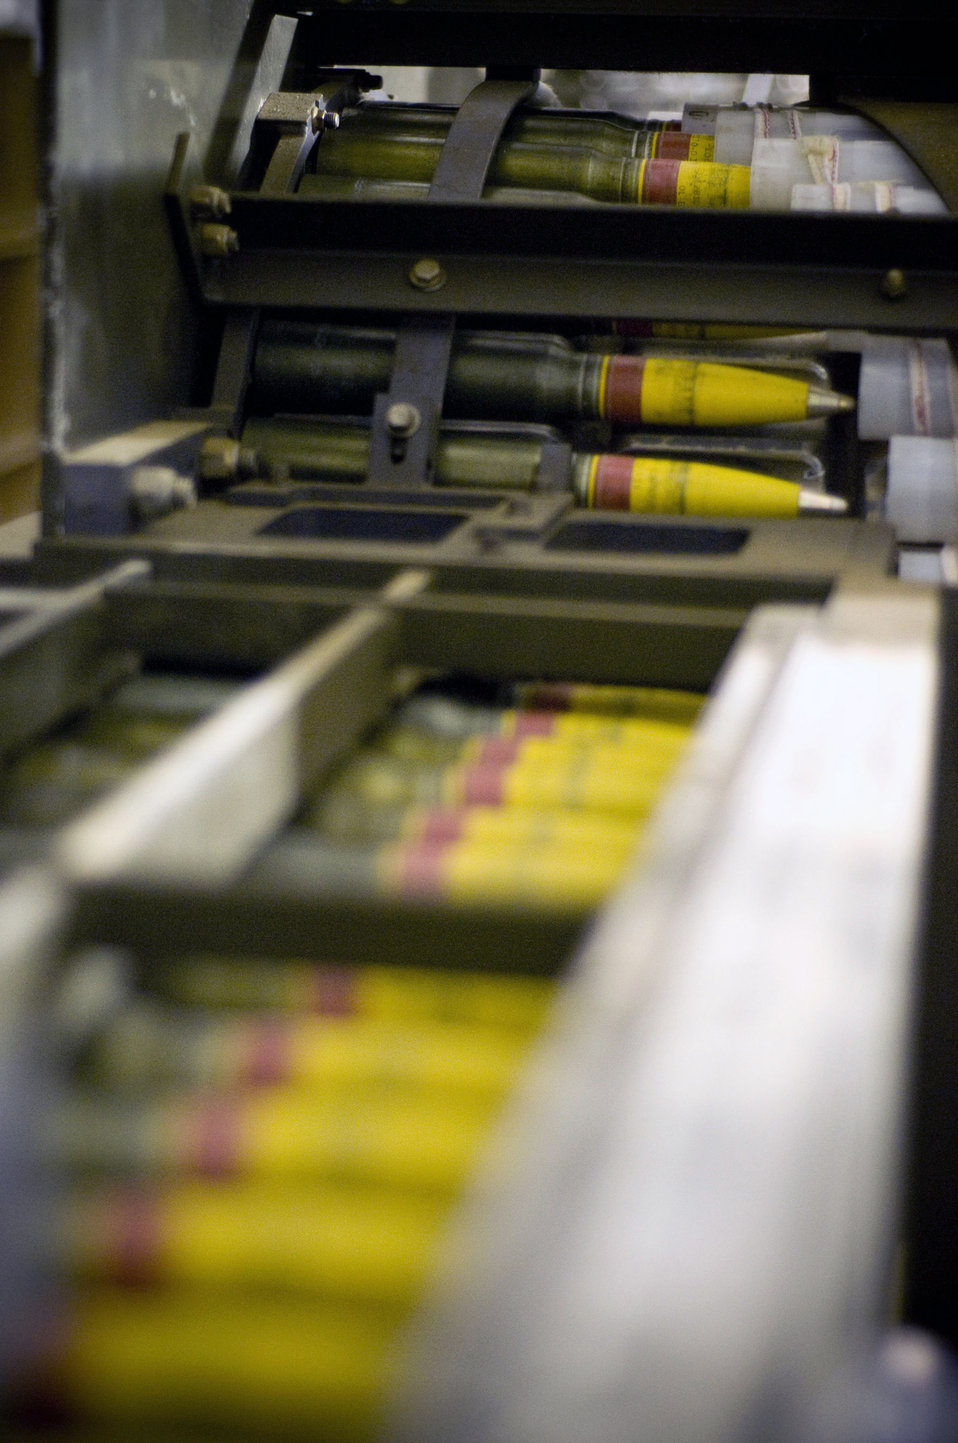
Feeding the Thunderbolt II

30mm high-explosive incendiary rounds feed through a GFU-7